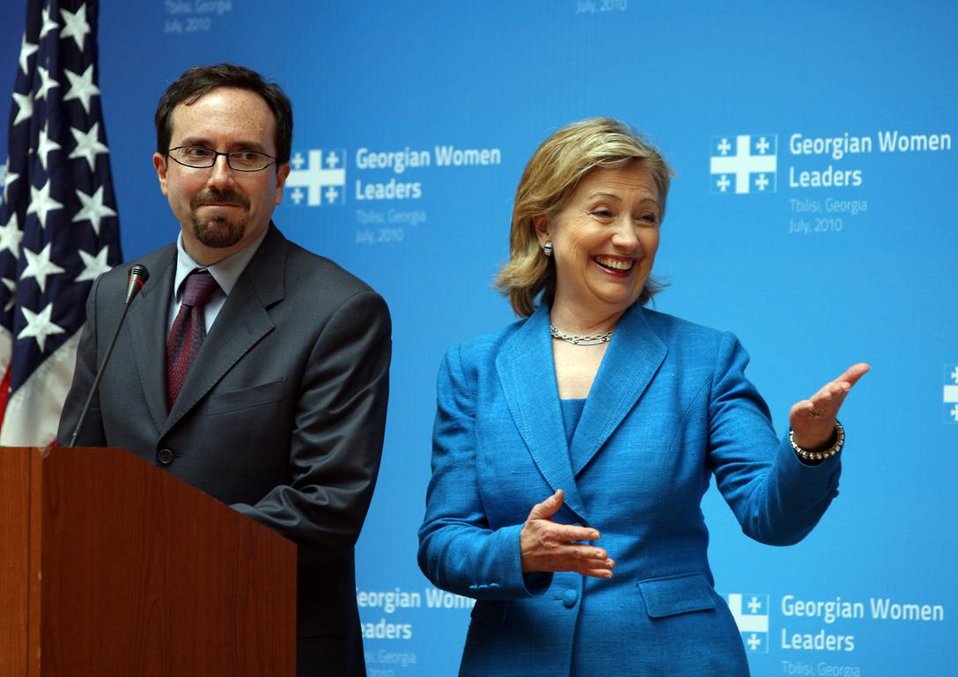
Ambassador Bass Introduces Secretary Clinton

U.S. Ambassador to John Bass introduces U.S. Secretary of State Hillary Rodham Clinton during opening remarks at the Town Hall meeting for Georgian Women Leaders in Tbilisi, Georgia, on July 5, 2010.